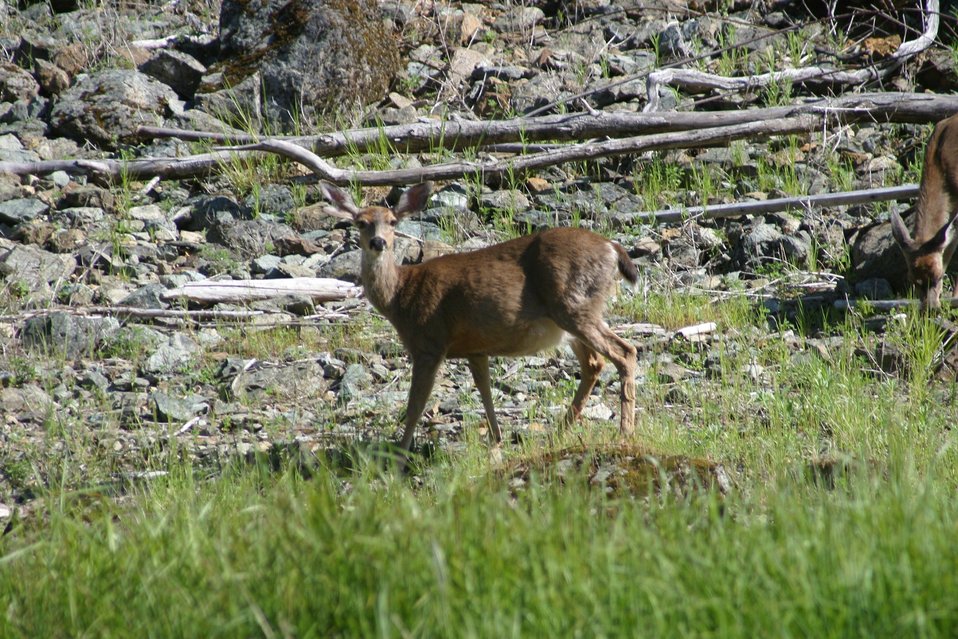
Wild section of the Rogue River from Grave Creek to Foster Bar May 19 to May 22.